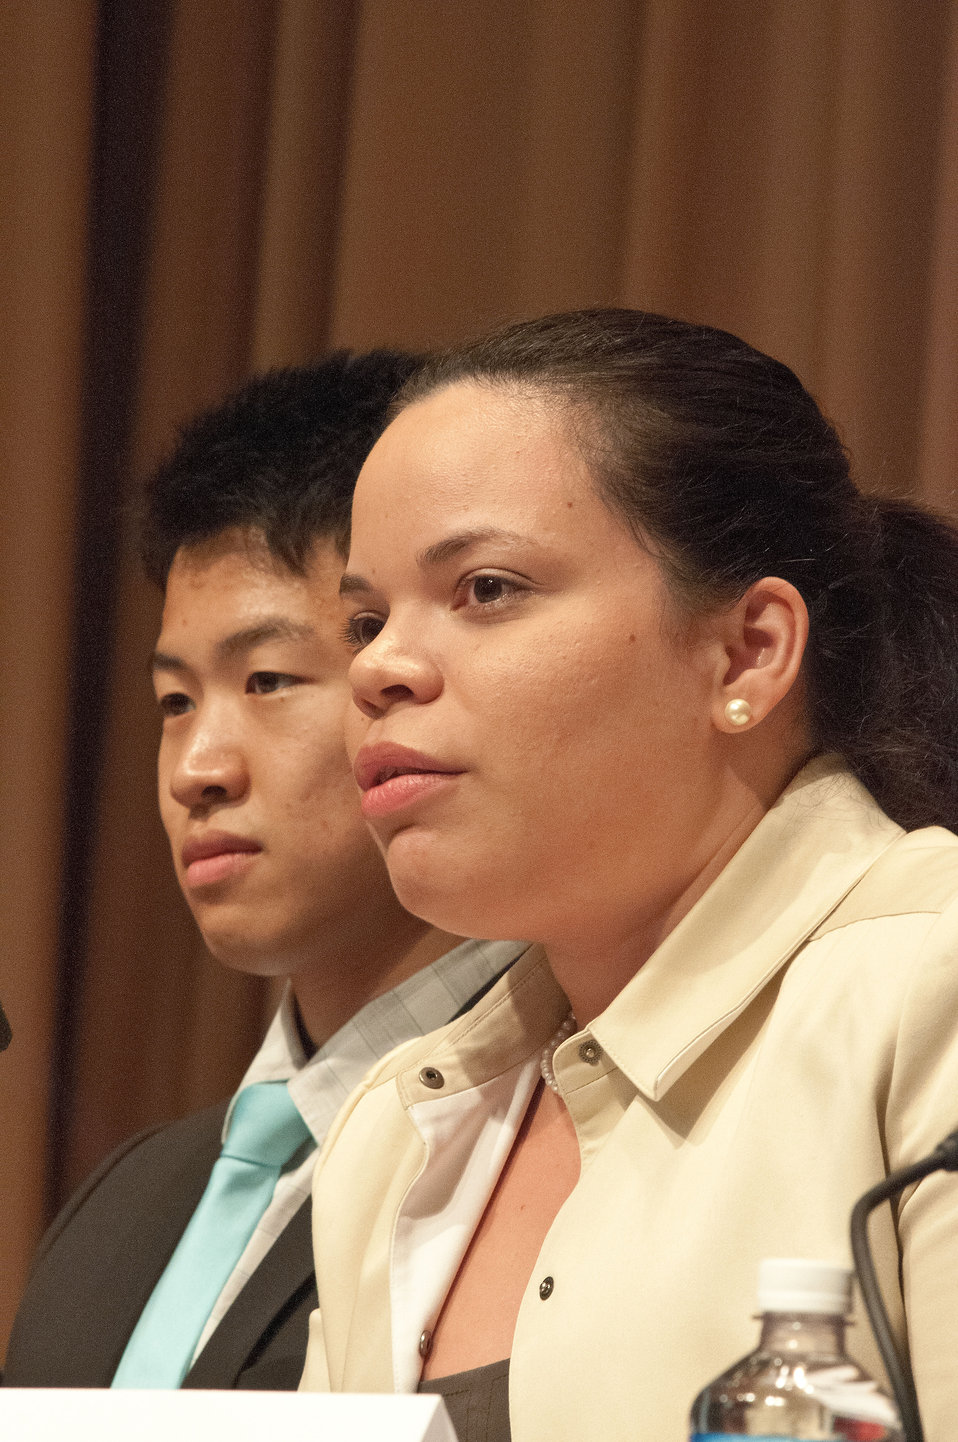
Laura Sepulveda, Food Safety Inspection Service (FSIS) a panel member and former intern at the United States Department of Agriculture (USDA) listens to questions from the audience at the USDA Intern Day and Panel Discussion, “Transforming USDA’S Tomorrow Today” in Washington, D.C., on Wednesday, July 11, 2012.